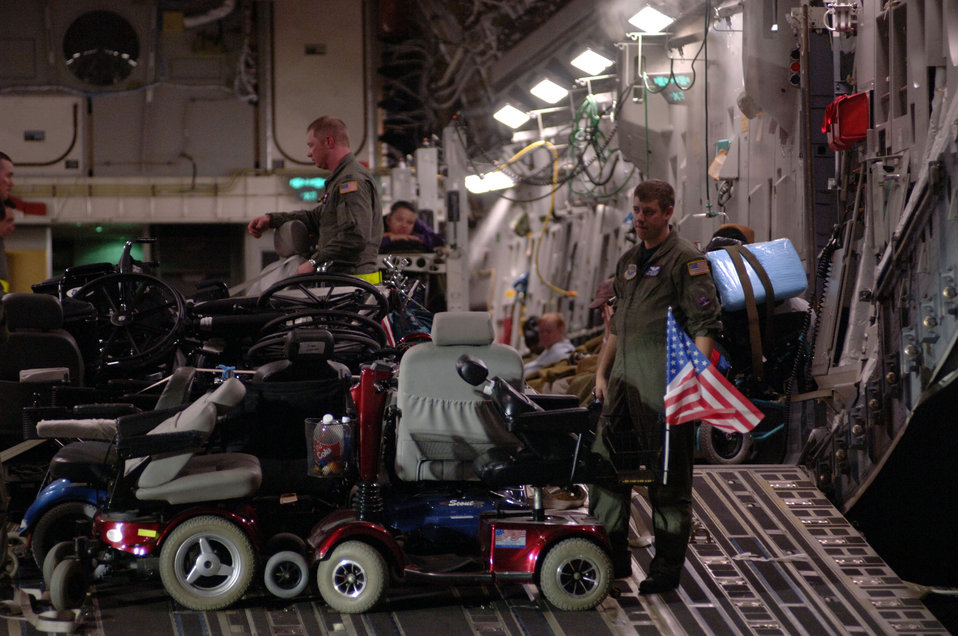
Rita support

BEAUMONT, Texas -- Critical Care Air Transport Teams from Lackland Air Force Base, Texas and the Mississippi Air National Guard along with Contingency Response Group Element personnel, work together at the Southeast Texas Regional Airport Sept. 23 to strap down patients’ wheelchairs in a C-17 Globemaster III in support of the Hurricane Rita relief efforts. The aircraft is from Mississippi ANG’s 172nd Airlift Wing.